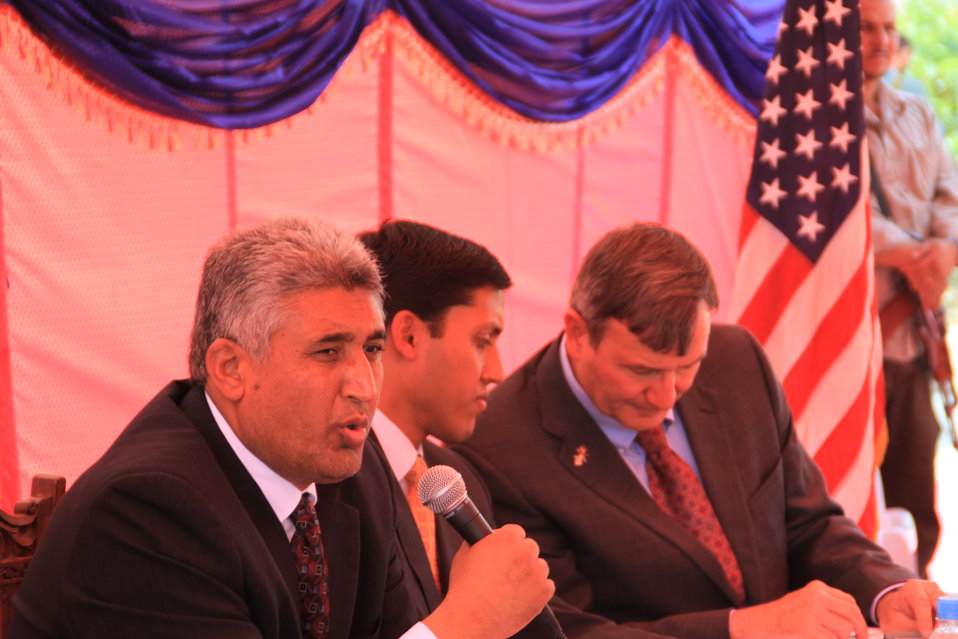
Badam Bagh Farm